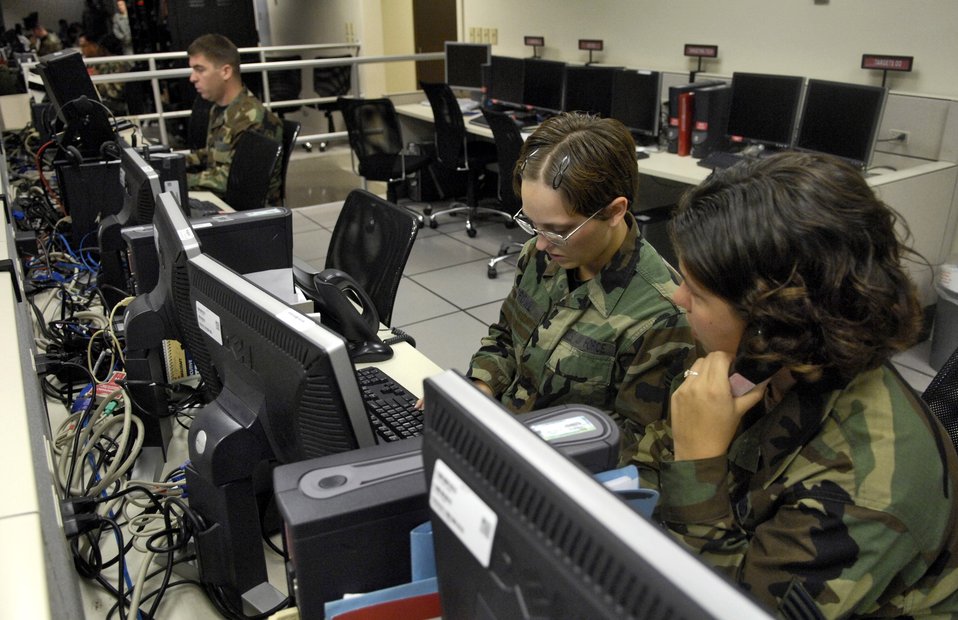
American, Japanese airmen join forces in Keen Edge '07

Airman 1st Class Whitney Sprowl and Senior Airman Samatha Blaine provide bilateral coordination for command and control of intelligence, surveillance and reconnaissance operations during Exercise Keen Edge '07 Feb. 2 at Hickam Air Force Base, Hawaii. The Airmen are from the 613th Air Operations Center. Keen Edge is a joint bilateral exercise to increase combat readiness and interoperability with the Japan Air Self Defense Force.